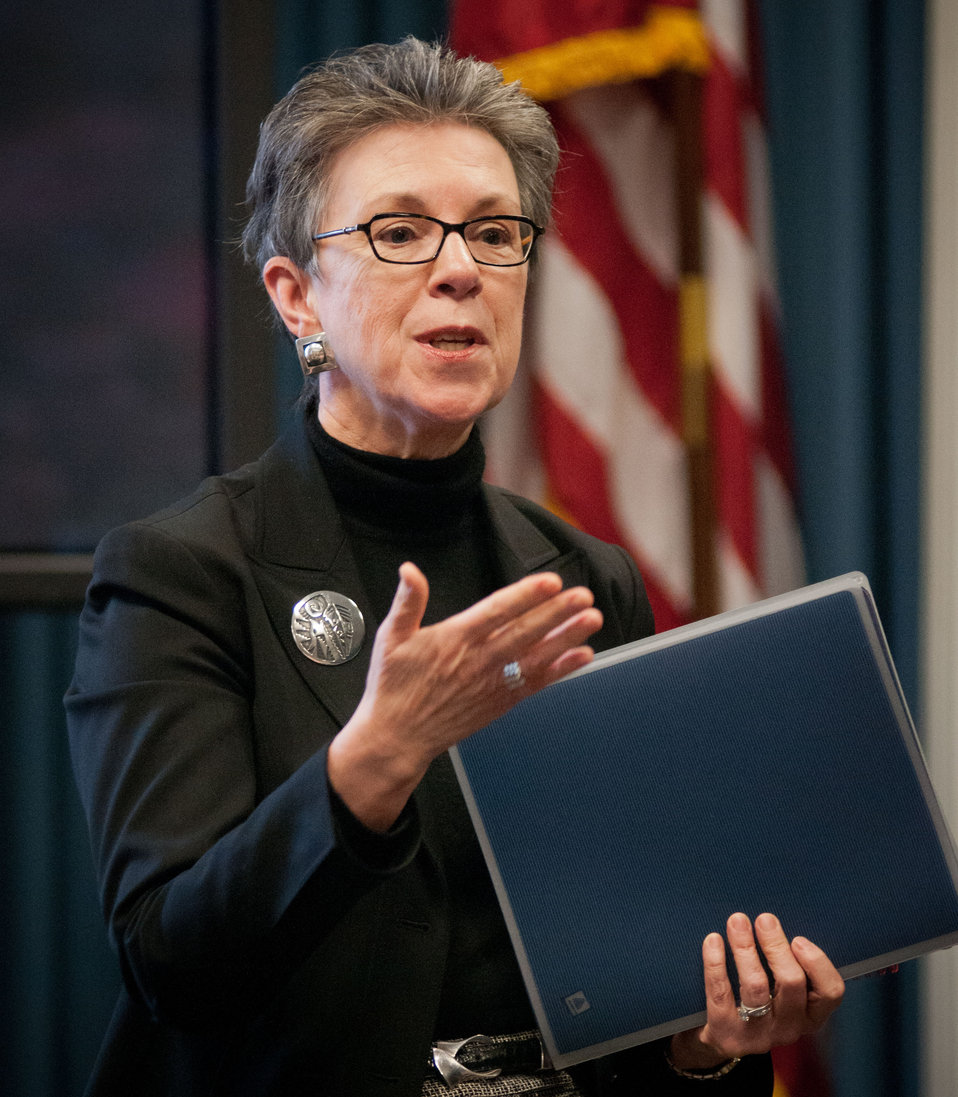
Agriculture Undersecretary Research Education and Economics Dr. Catherine Woteki responds to a stakeholder with additional information about the Agriculture research budget, during a question and answer period about the Agriculture FY2013 budget at the Department of Agriculture in Washington. D.C. onMonday, February 13, 2012.